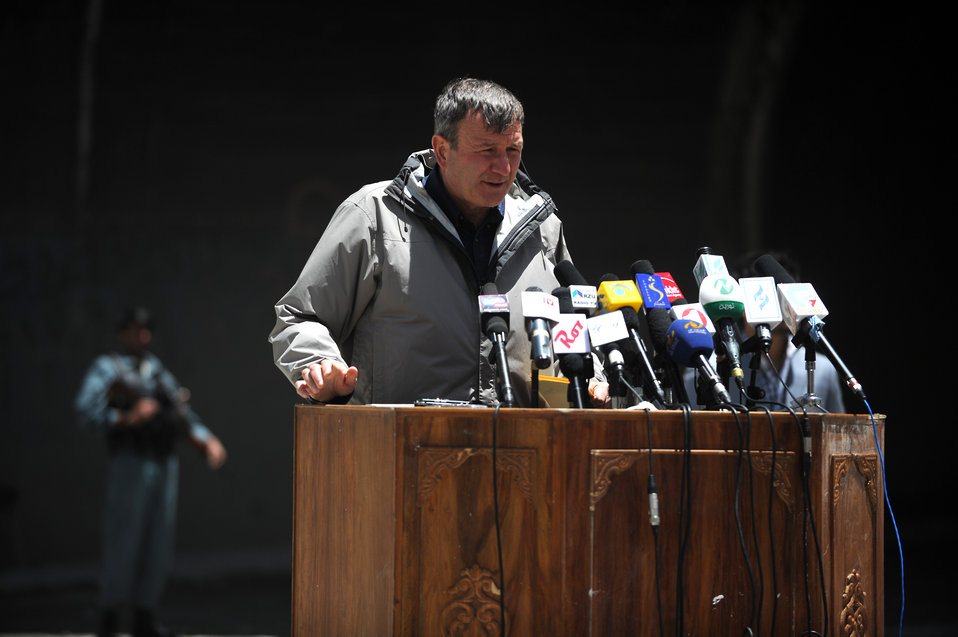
U.S. Ambassador Karl W. Eikenberry makes remarks during a ceremony to mark the beginning of renovations at the Salang Tunnel on the border of Parwan and Baghlan Provinces, Afghanistan, on Wednesday, June 15, 2011. (S.K.Vemmer/Department of State)